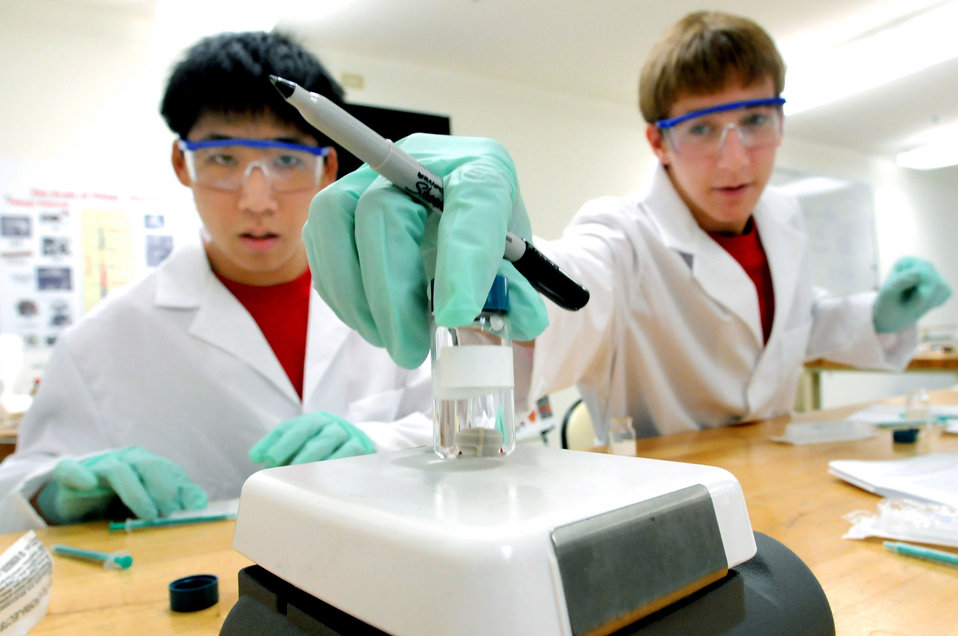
Nanoscience students from the Center for Nanoscience Materials at Argonne National Laboratory weigh chemicals before testing.